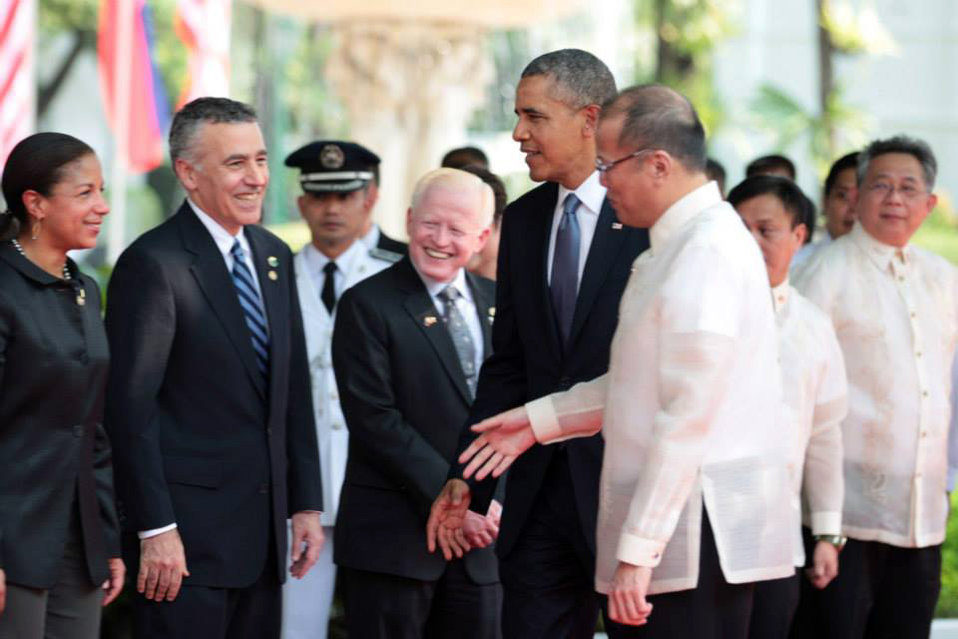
Presidents Obama and Aquino III Speak With Ambassadors Rice, Goldberg, and Cuisia, Jr.

U.S. President Barack Obama and Philippine President Benigno Aquino III speak with U.S. National Security Advisor Susan Rice, U.S. Ambassador to the Philippines Philip S. Goldberg, and Philippine Ambassador to the U.S. Jose Cuisia, Jr., during the arrival ceremony at the Malacañan Palace in Manila, Philippines, on April 28, 2014.